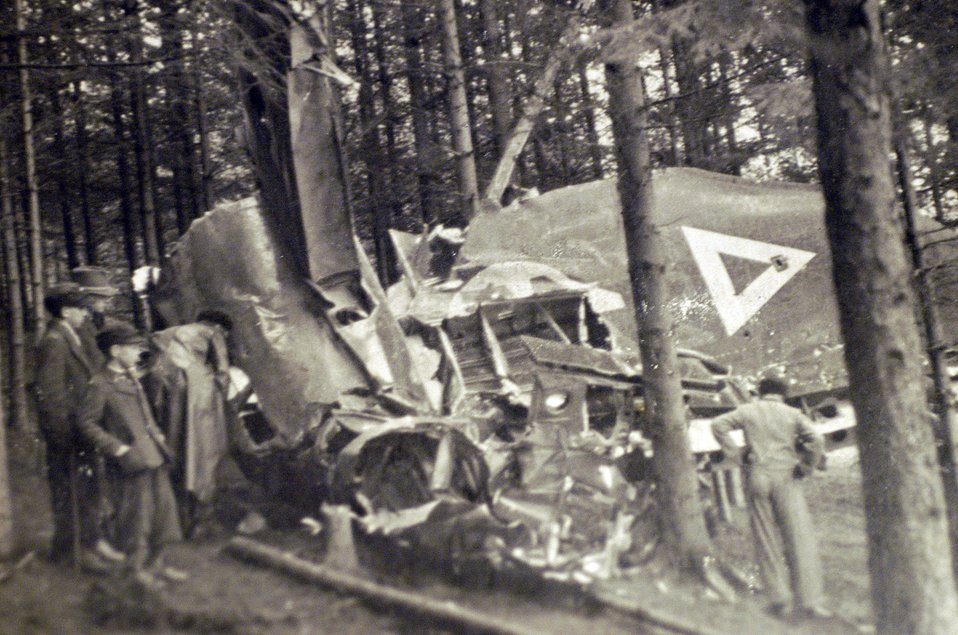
JPAC team returns from Austria

A photo donated to Joint POW/MIA Accounting Command by the landowner of depicts the site of a B-17 bomber crash May 10, 1944, near Vostenhof, Austria. The crash claimed the lives of 1st Lt. Stanley Dwyer and gunner Sgt. John Boros.